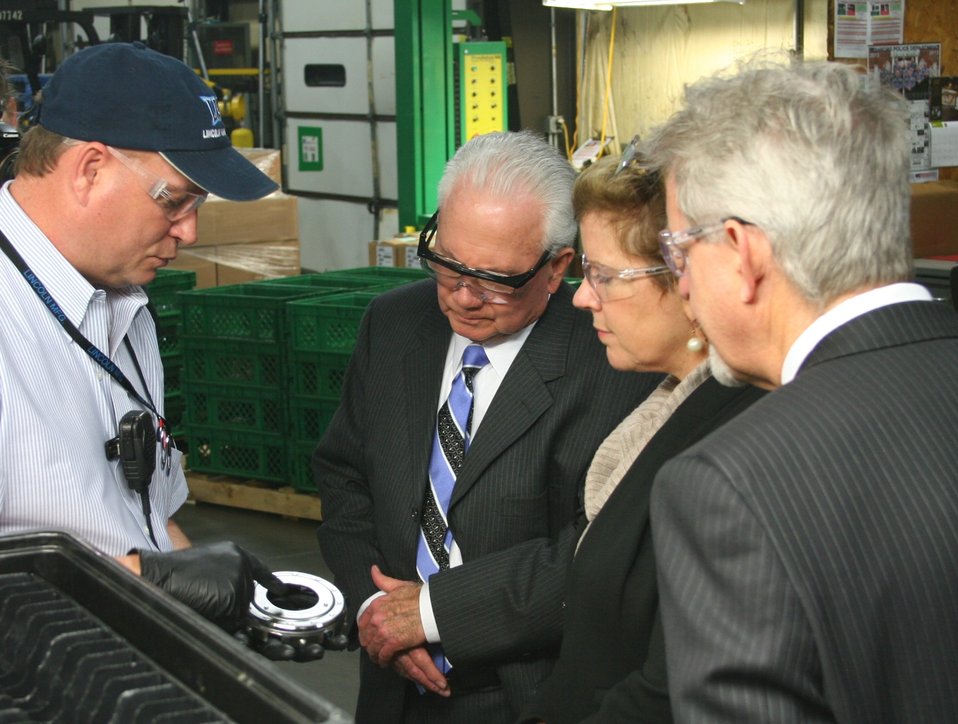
Lincoln 3-6-13-3

Lincoln Manufacturing USA, LLC employee Jeff Burkett explains product details to Kentucky State Director Tom Fern, U.S. Department of Agriculture (USDA) Rural Development (RD) Rural Business- Cooperative Service (RBCS) agency Acting Administrator Lillian Salerno, and USDA RD RBCS Kentucky program director Jeff Jones in Stanford, KY on Mar. 6, 2013.